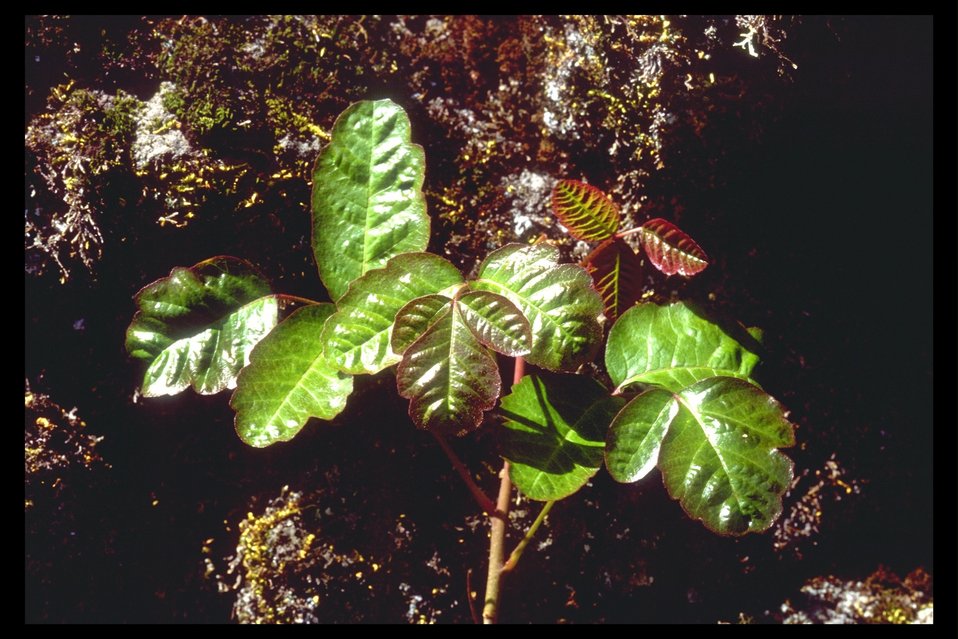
Poison Oak (Toxicodendron diversilobum) found near Upper Table Rock.